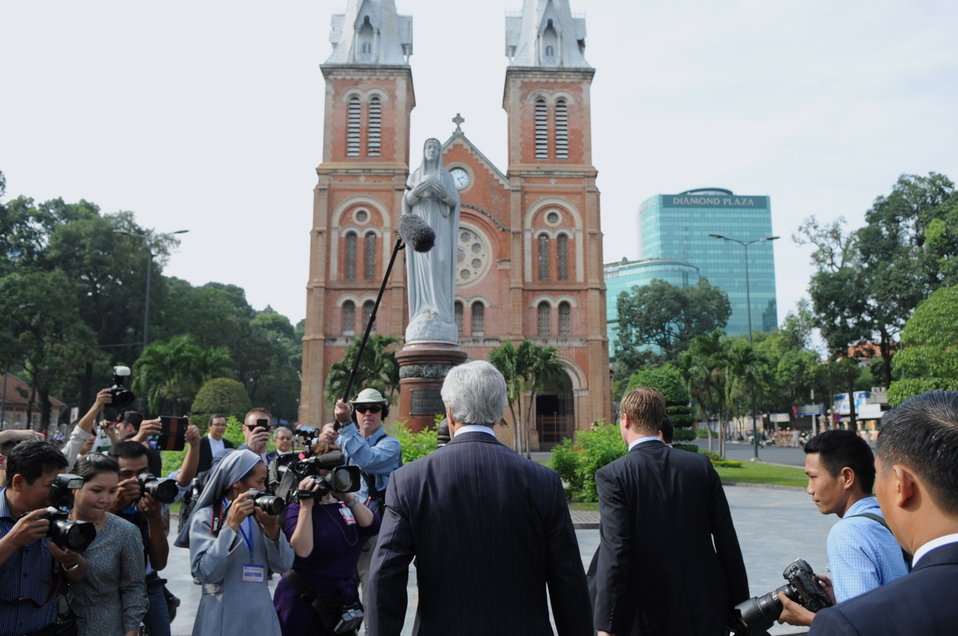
Secretary Kerry Arrives at Notre Dame Cathedral in Vietnam for Mass

U.S. Secretary of State John Kerry arrives at Notre Dame Cathedral in Ho Chi Minh City, Vietnam, for Mass on December 14, 2013.